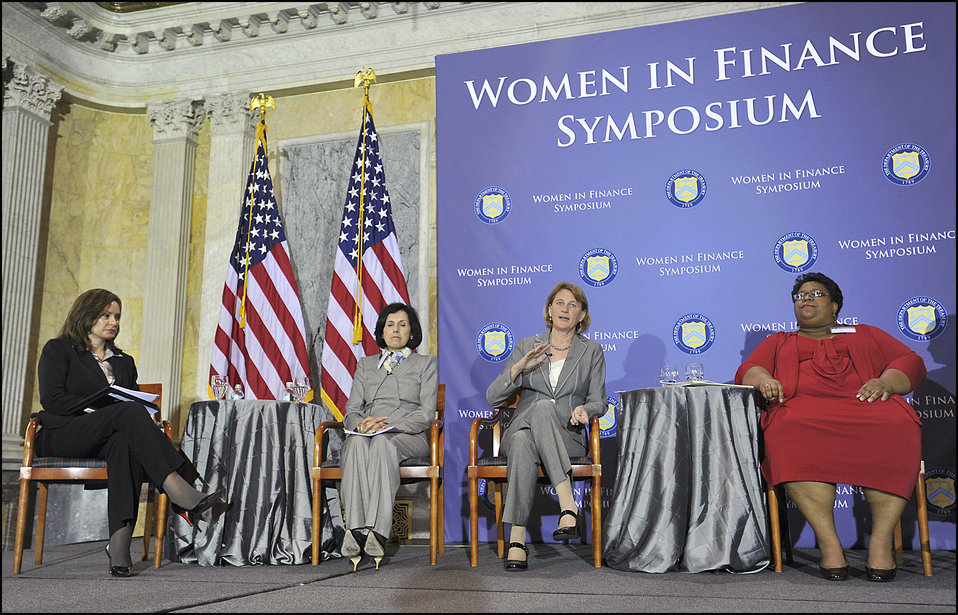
Women in Finance Investment Symposium

Treasurer Rosie Rios moderated the first panel of the day on Adapting and Innovating in the Financial Markets. Panelists included CEO of CalPERS Anne Stausboll, CIO of the New York State Common Retirement Raudline Etienne, Founder and President of Investure Alice Handy, CIO and VP of Investments for University of California Marie Berggren, and VP and CIO MacArthur Foundation Susan Manske.